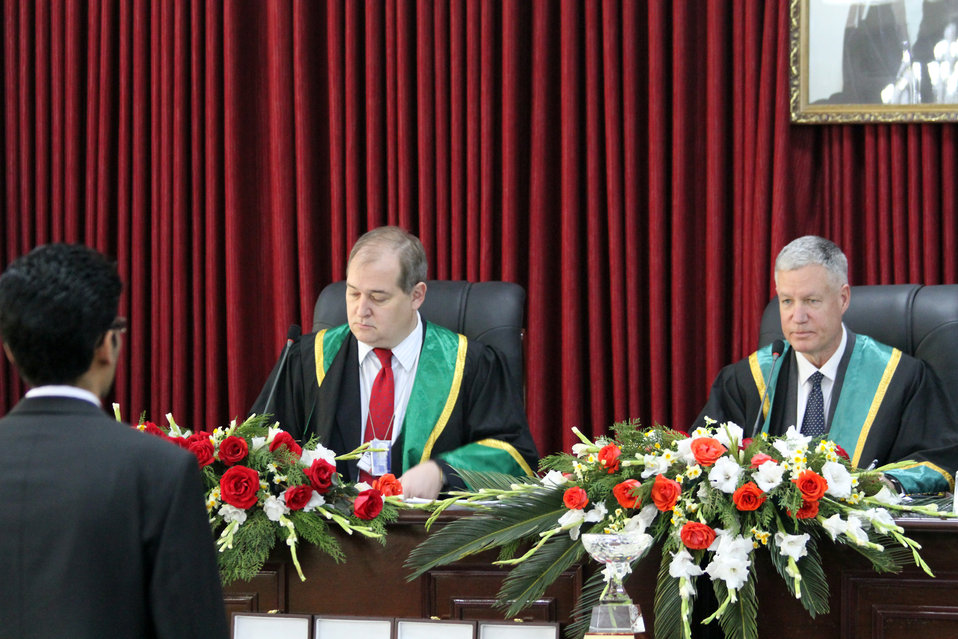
Afghanistan Final National Round of the 2013 Philip C.Jessup International Law Moot Court Competition